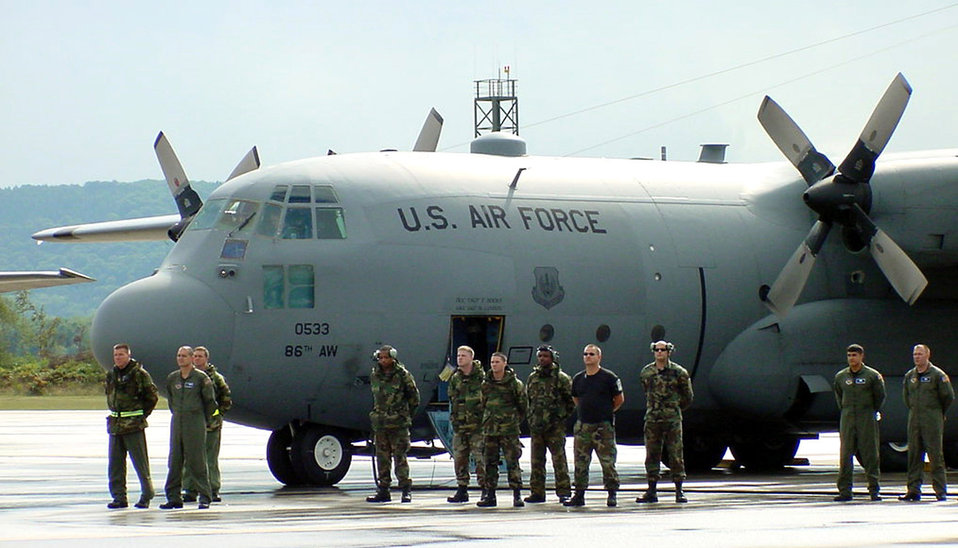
911 Remembered

RAMSTEIN AIR BASE, Germany -- Members of the 37th Airlift Squadron and 86th Maintenance Squadron here, observe three minutes of silence Sept. 14 to remember victims and families of the U.S. terrorist attacks Sept. 11.